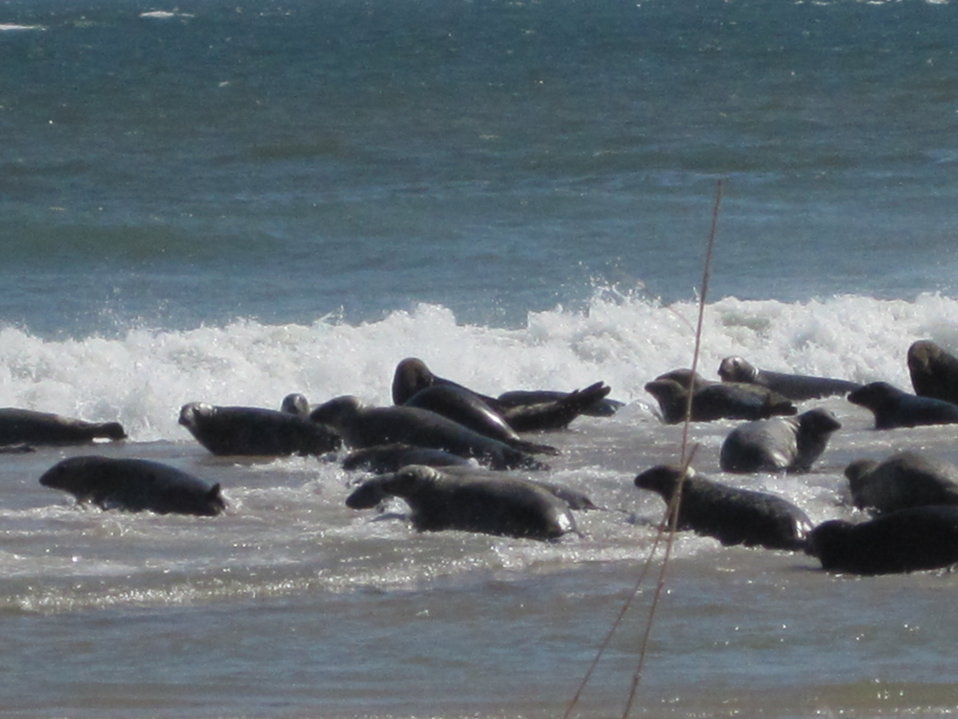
Seals on South Monomoy Island

Seals gather on South Monomoy Island, a few hundred yards from the lighthouse.

Credit: Keith Shannon/USFWS

Monomoy National Wildlife Refuge is part of the Eastern Massachusetts National Wildlife Refuge Complex.